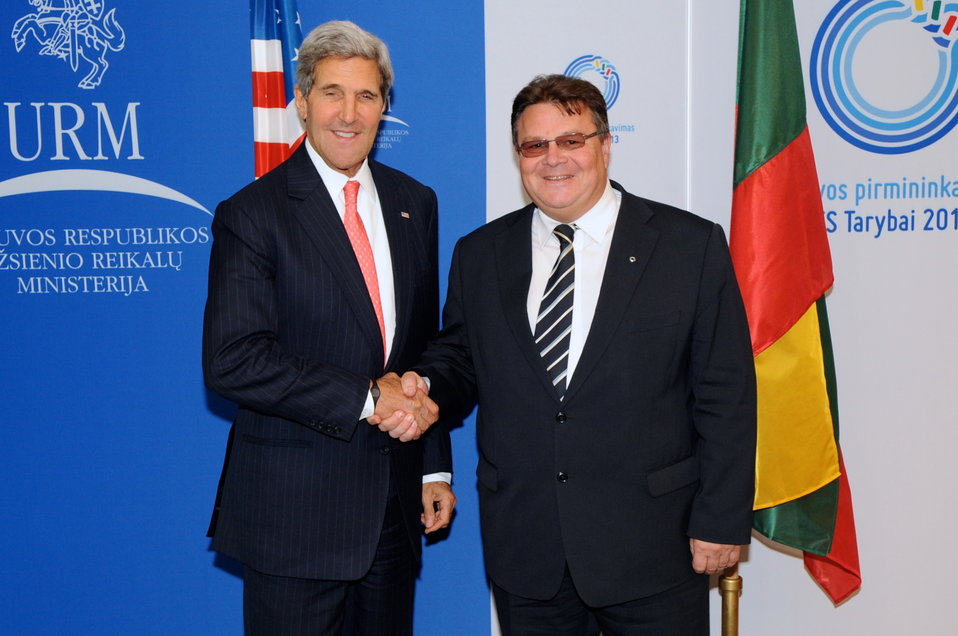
Secretary Kerry Meets With Lithuanian Foreign Minister Linkevičius

U.S. Secretary of State John Kerry and Lithuanian Foreign Minister Linas Linkevičius shake hands before a meeting at the Ministry of Foreign Affairs in Vilnius, Lithuania on September 7, 2013.